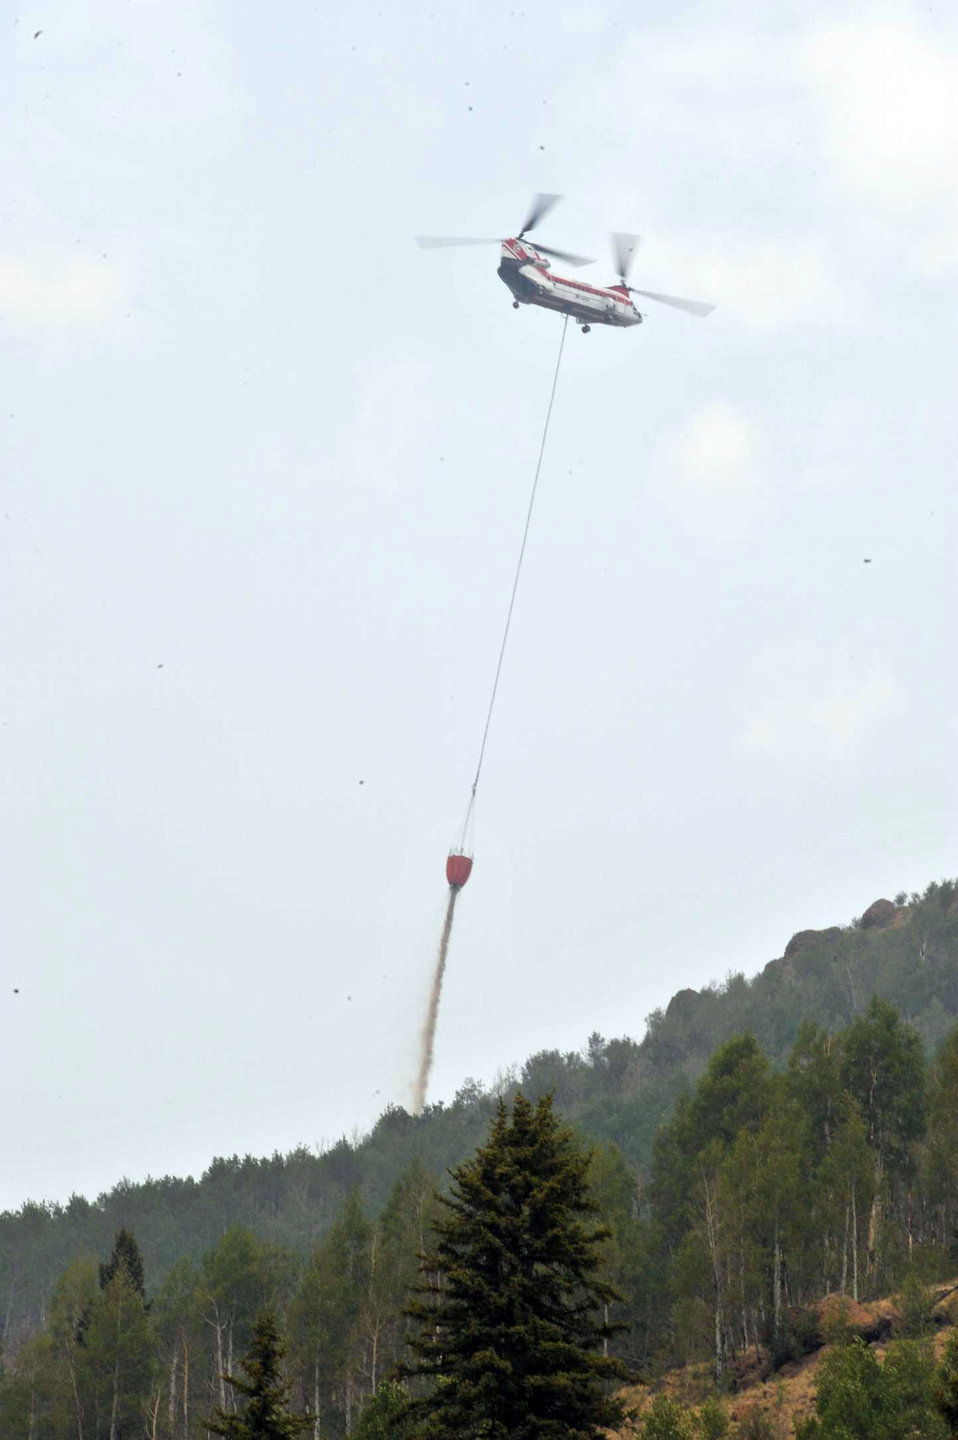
A Boing-Vertol 234 Helicopter drops a bucket of water over the West Fork Fire south of Creed, CO. The West Fork Complex Fire is made of four fires, Papoose Fire, East Zone of West Fork Fire, West Zone of West Fork Fire, and Windy Pass Fire. The fires located in the vicinity of Pagosa Springs, CO began on Jun. 05, 2013 by lightning strikes. The multiple fires have consumed approximately 109,615 acres.